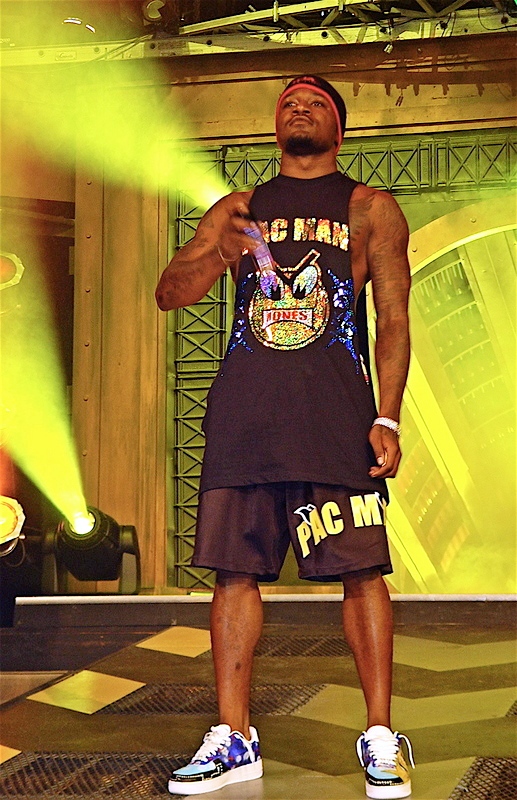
Pac Man Jones in the TNA Impact Zone Orlando Florida Photo by Rob Beukema
Category:Professional wrestling free use media